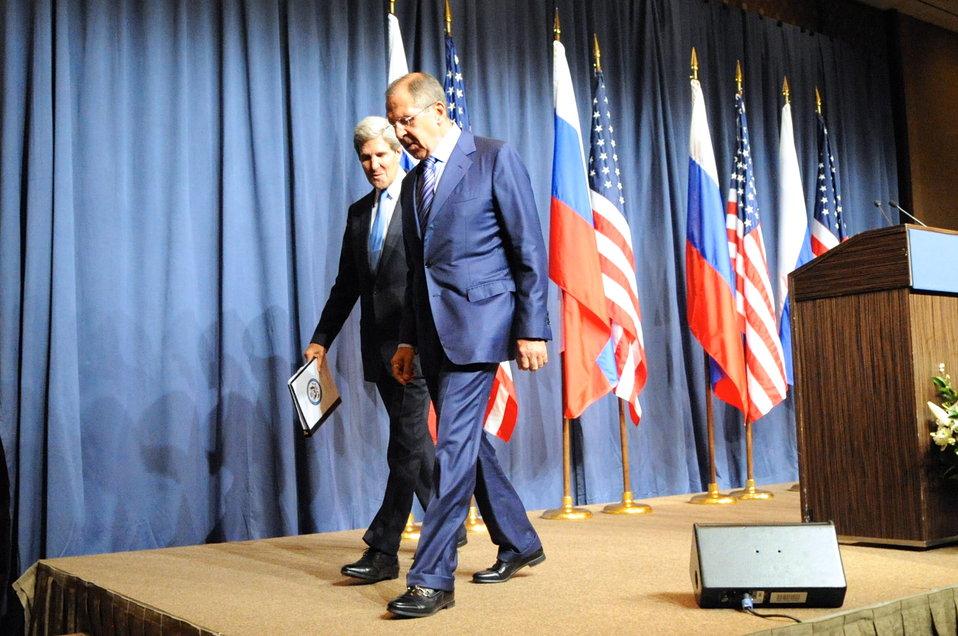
Secretary Kerry and Russian Foreign Minister Lavrov Leave Press Availability

U.S. Secretary of State John Kerry and Russian Foreign Minister Sergey Lavrov exit the stage at a hotel in Geneva, Switzerland, after their joint statements at the start of talks aimed at ridding Syria of chemical weapons on September 12, 2013.